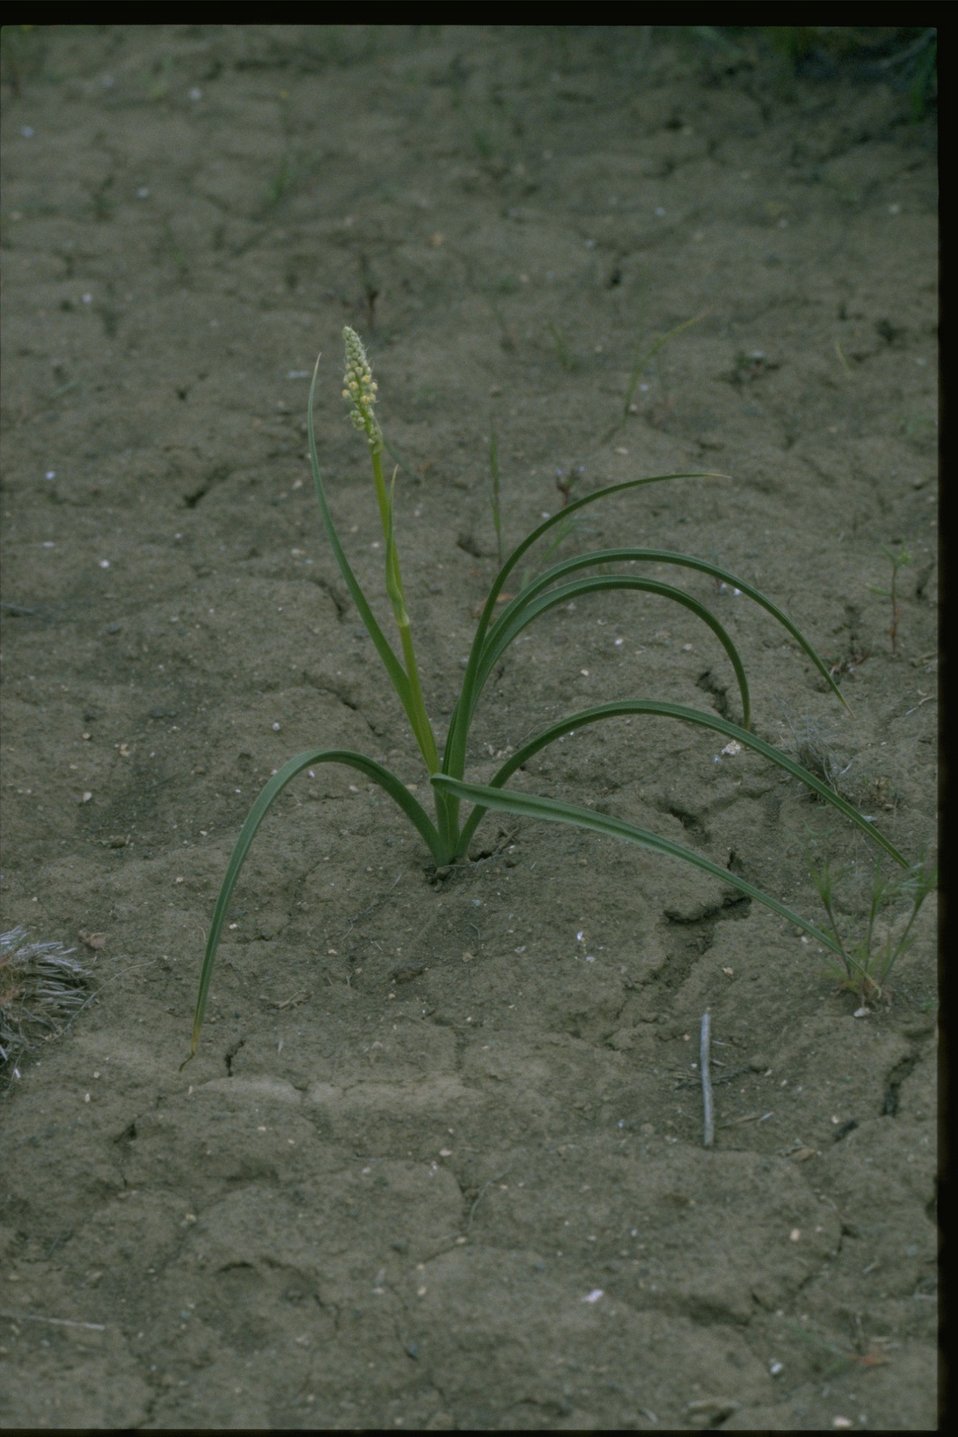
Farshot of False dandelion, Agoseris glauca.